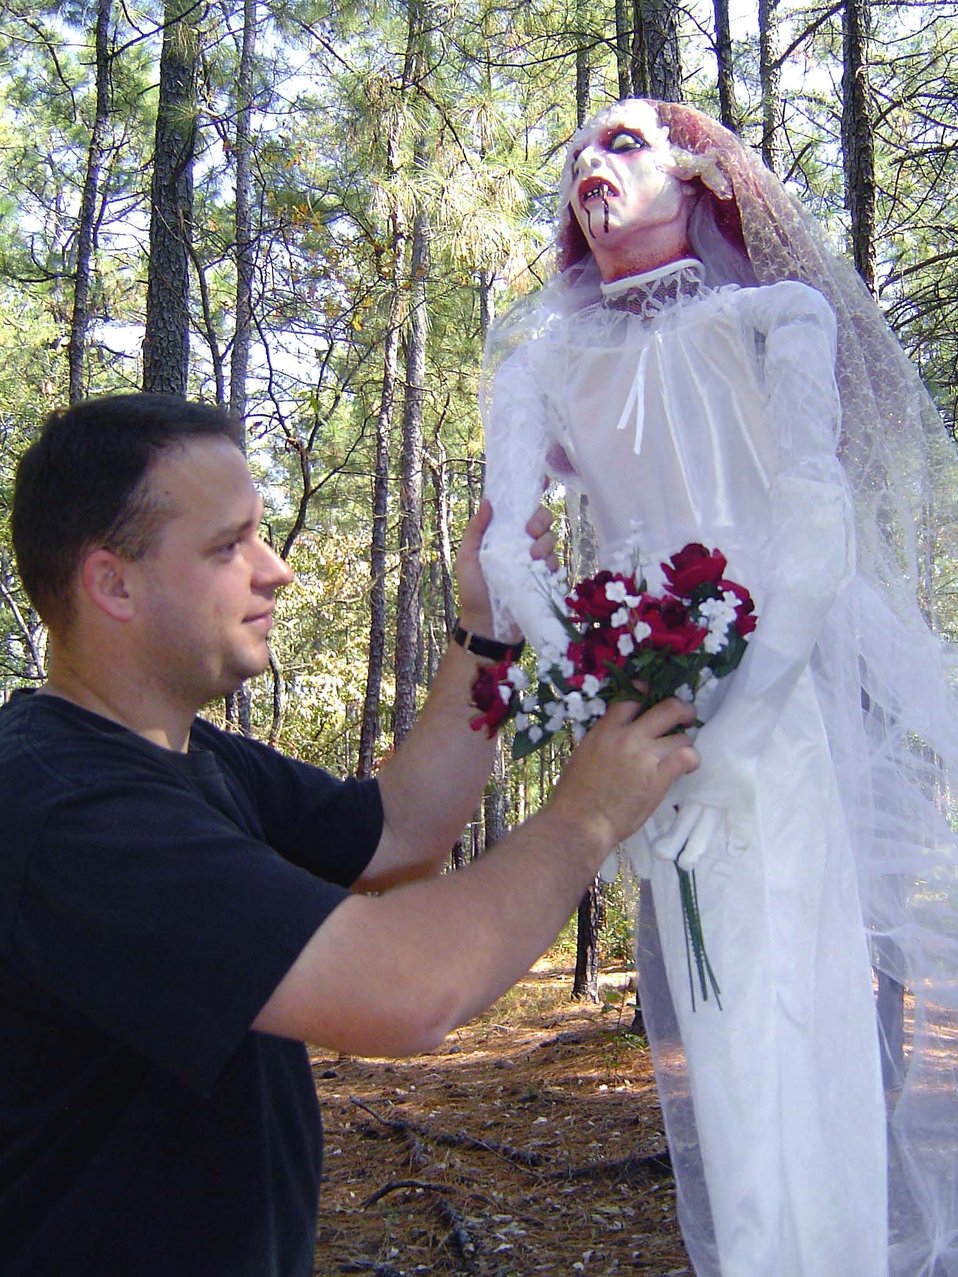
Fright sight

POPE AIR FORCE BASE, N.C. -- Staff Sgt. Chuck Schmidt helps prepare for the Haunted Woods here by dressing up a